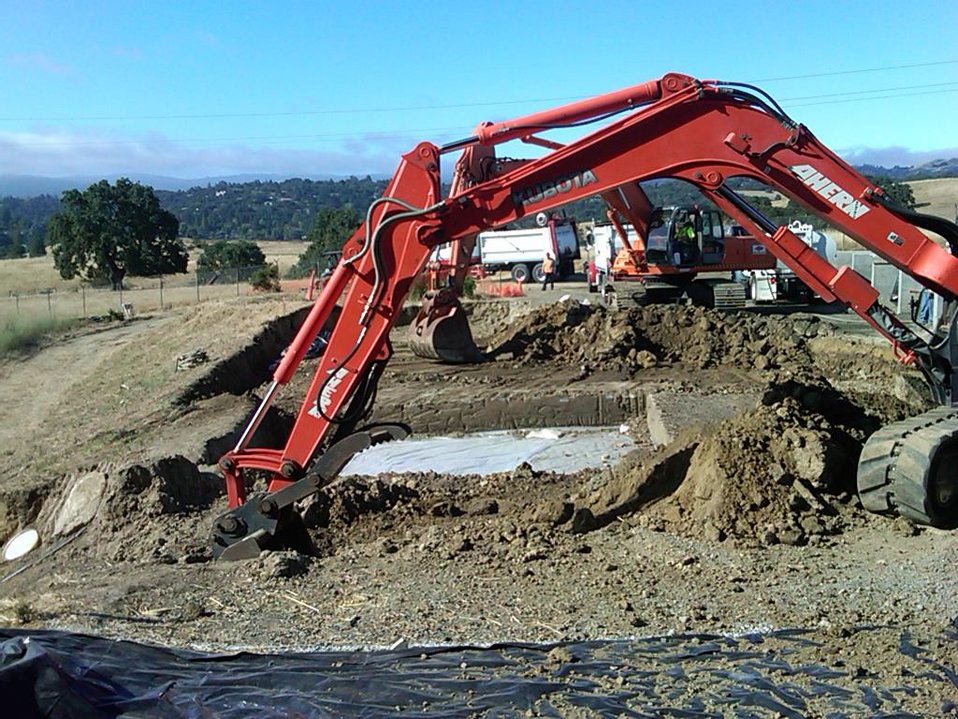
Recovery Act Supports Soil and Debris Cleanup, Groundwater Treatment at SLAC

Recovery Act workers are on track to remove more than 30,000 cubic yards of contaminated soil and debris at the SLAC National Accelerator Laboratory by September 2011.
The Recovery Act invested $14.3 million in legacy cleanup activities at SLAC. In addition to removing contaminated soil and debris that is shipped to local disposal facilities, Recovery Act workers installed three new groundwater treatment systems.